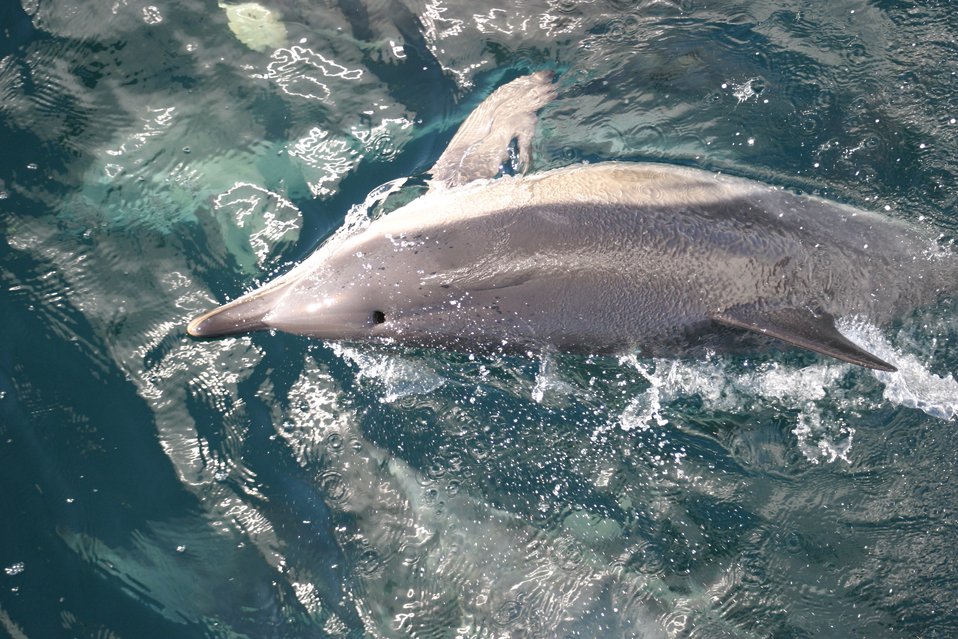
Dolphins.